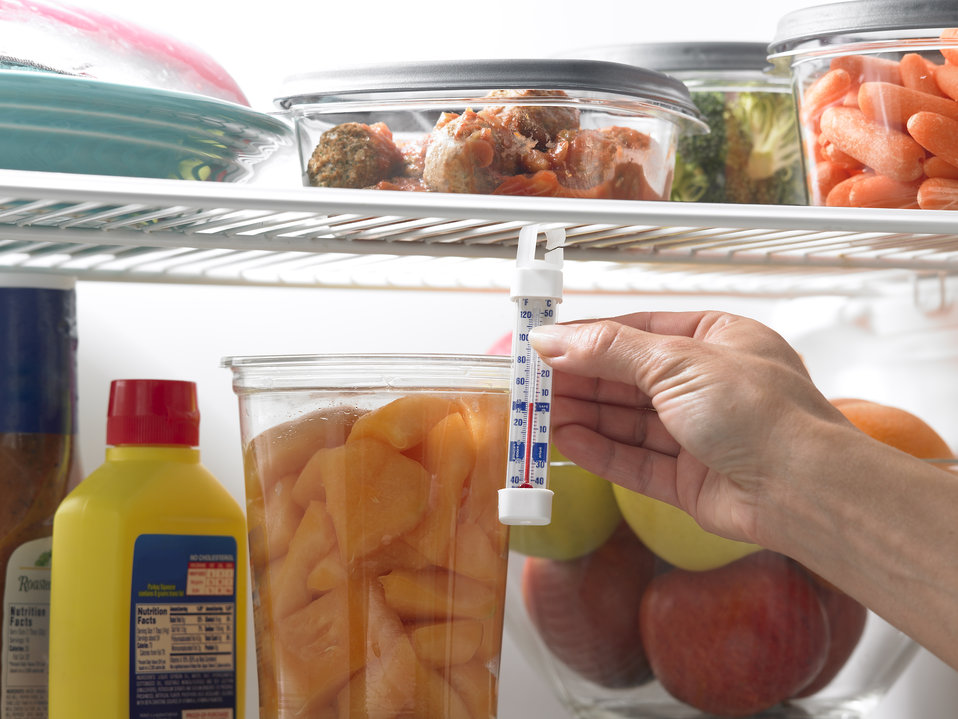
Keep an appliance thermometer in your refrigerator to check the temperature. The temperature in the refrigerator should be set at 40 °F or below.